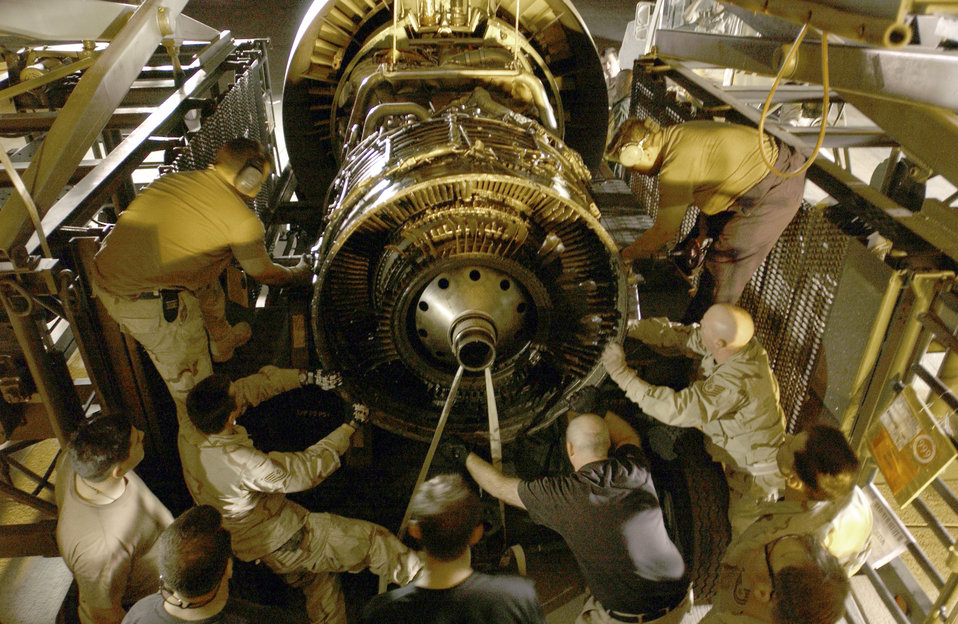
Big engine trouble

SOUTHWEST ASIA -- Airmen with the 8th Expeditionary Maintenance and 379th Expeditionary Civil Engineer Squadrons remove the No. 4 engine from a C-5 Galaxy at a forward-deployed location here Jan. 14. The Galaxy landed with three engines after it had an in-flight emergency during take off from Baghdad International Airport. Initial reports indicate the incident was the result of hostile action from the ground.